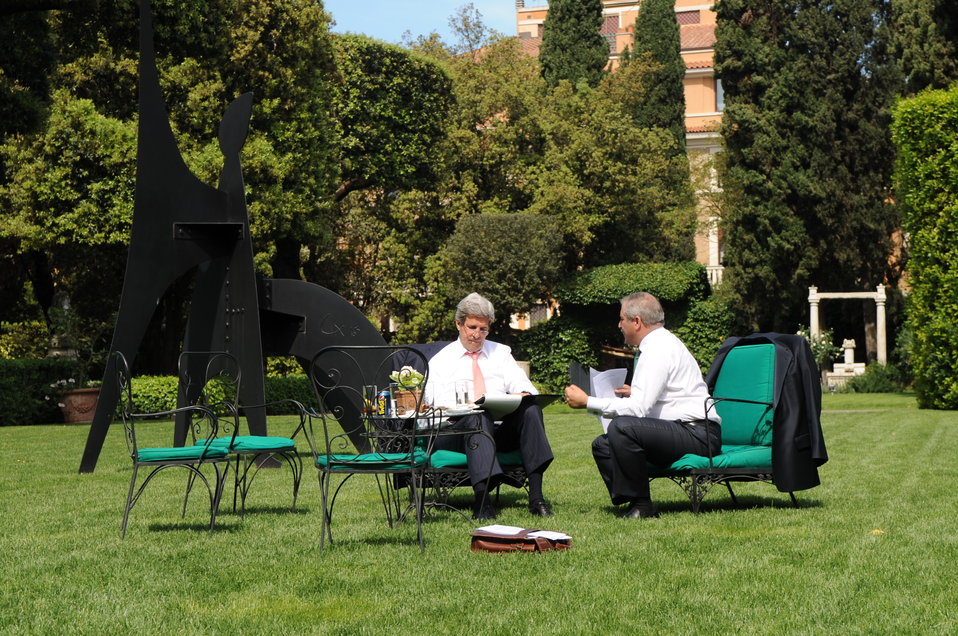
Secretary Kerry Meets With Jordanian Foreign Minister Judeh

U.S. Secretary of State John Kerry and Jordanian Foreign Minister Nasser Judeh meet one-on-one in the backyard of the U.S. ambassador's residence, the Villa Taverna, in Rome, Italy, on May 9, 2013.